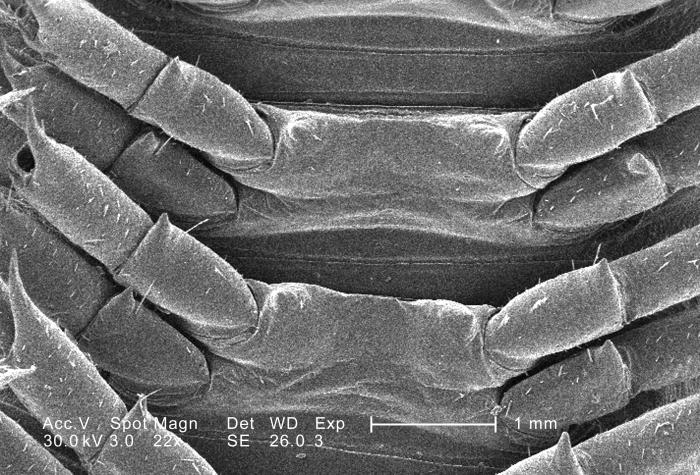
This scanning electron micrograph (SEM) depicted a magnified inferior view of a number of body segments of an unidentified millipede found outside on the ground in the Decatur, Georgia suburbs. Note the two pairs of jointed legs per segment identifying this as a millipede, and not a centipede, which possesses only a single pair of legs per segment; Magnification 22x.